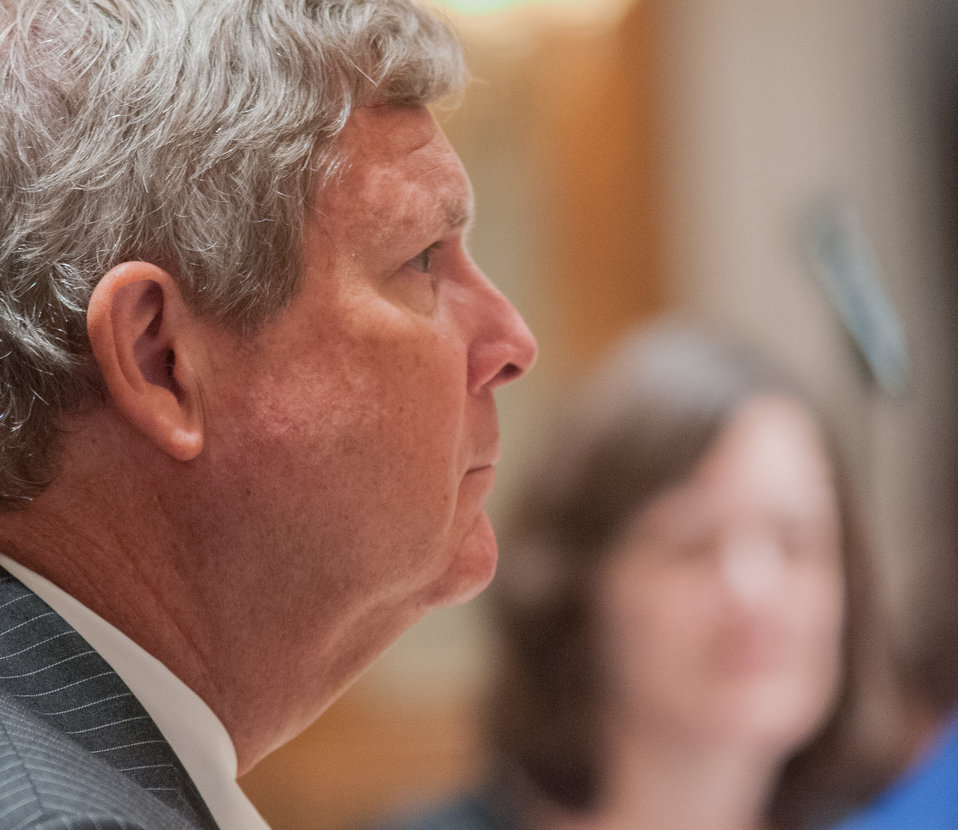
Agriculture Secretary Tom Vilsack, at the U.S. Department of Agriculture's (USDA) Council for Native American Farming and Ranching (CNAFR) members, on Monday, Sep. 9, 2013 at the L'Enfant Plaza Hotel, in Washington, D.C. CNAFR was created to advise the Secretary on ways to eliminate barriers to participation for Native American Farmers and Ranchers in USDA programs. The Council was established as part of the Keepseagle settlement, and is conducted under the oversight of USDA's Office of Tribal Relations, which is part of the Office of the Secretary of Agriculture. Also in attendance is The Director of Tribal Relations Leslie Wheelock, Agriculture Assistant Secretary for Civil Rights Joe Leonard, Jr. Ph.D., Farm Services Administration Administrator Juan M. Garcia and Deputy Administrator for Farm Loans Programs Chris Beyerhelm.